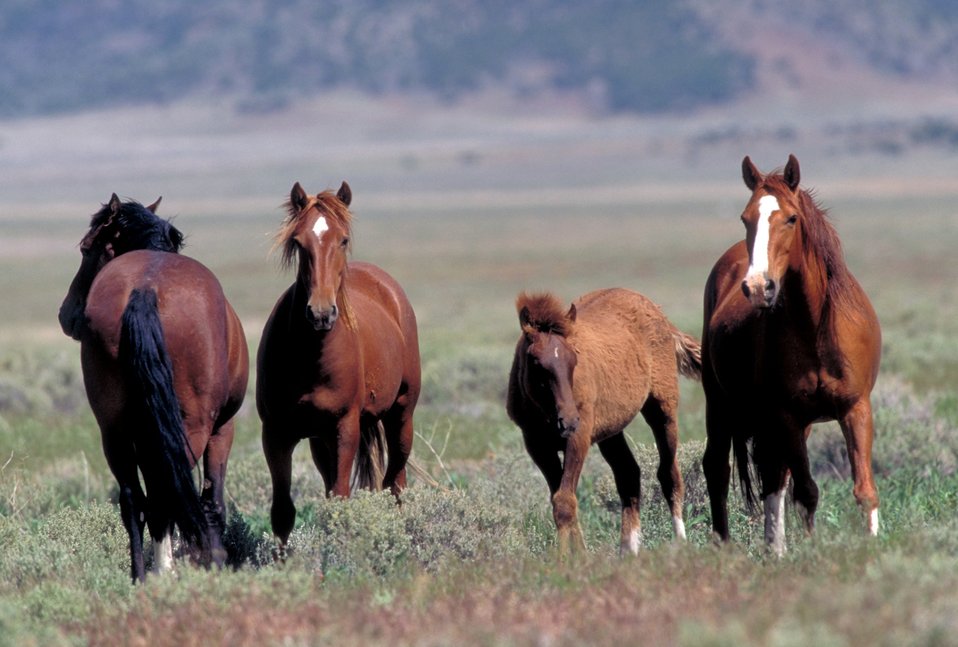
Onaqui Herd near Dugway, Utah.